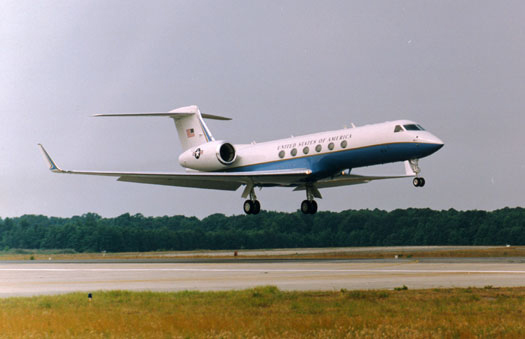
C-37